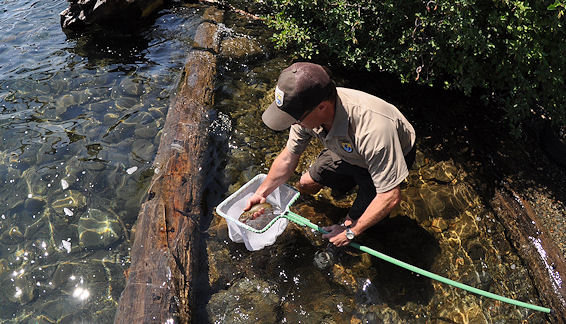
Releasing a Lahontan cuttroat trout in Fallen Leaf Lake

Stocking more than 8,000 Lahontan cutthroat trout in Fallen Leaf Lake, Tahoe Basin, Calif., September 10, 2010.